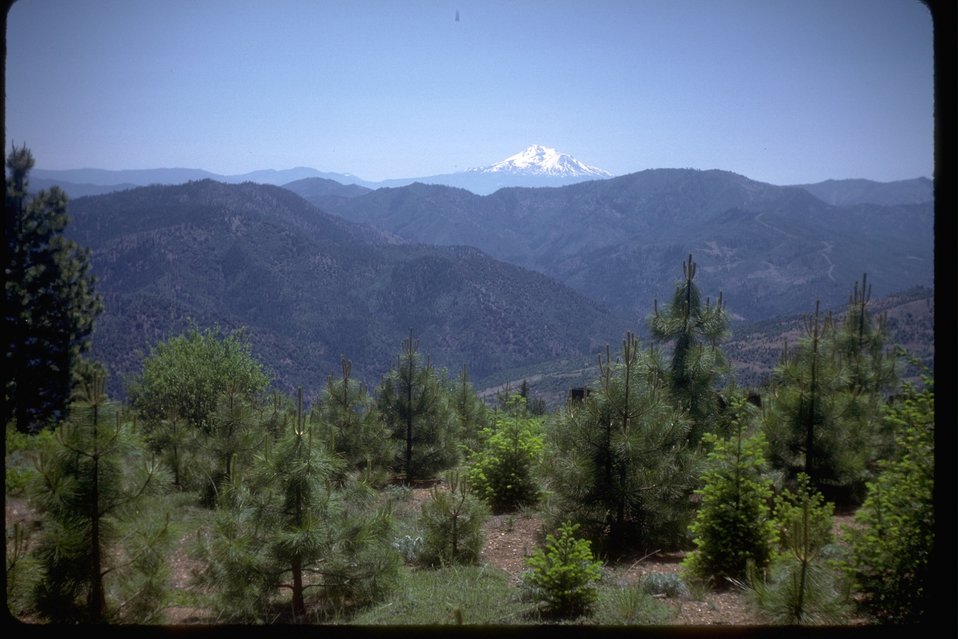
Recently planted trees in the China Gulch area with Mt. Ashland in the background.